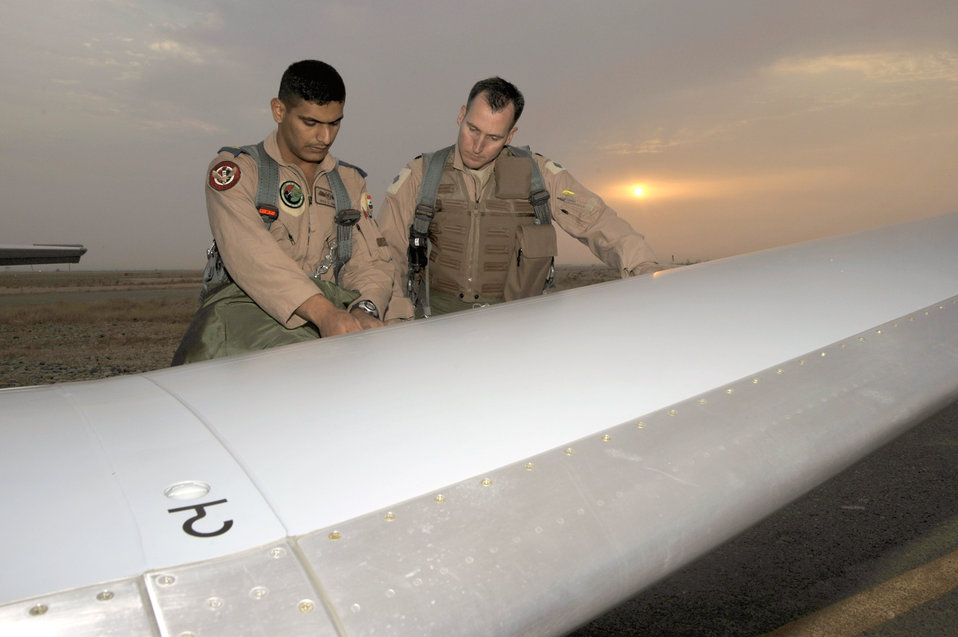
U.S. Airmen train future Iraqi air force pilots

Lt. Col. Charles Stevens goes over the pre-flight check list with an Iraqi air force student pilot Sept. 26, 2010, at Tikrit Air Base, Iraq. U.S. Air Force instructor pilots are training and advising the first group of Iraqi air force instructor pilots on the T-6A Texan II as part of the advise, train, assist and equip mission of Operation New Dawn. Once qualified, the Iraqi air force pilots will become instructor pilots and continue to train the next generation of pilots. Colonel Stevens is the 52nd Expeditionary Flying Training Squadron commander.